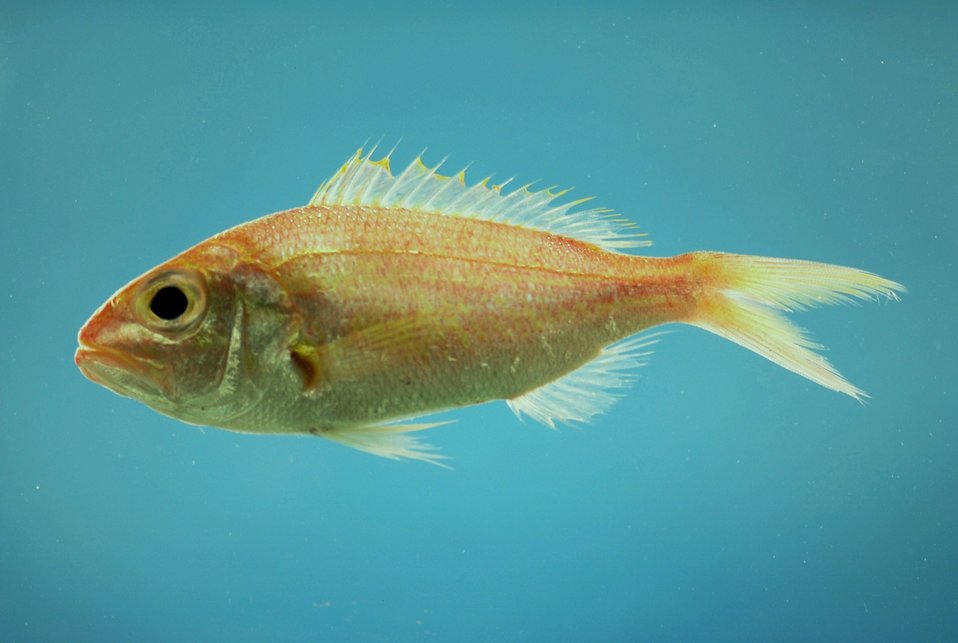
Wenchman ( Pristipomoides aquilonaris )